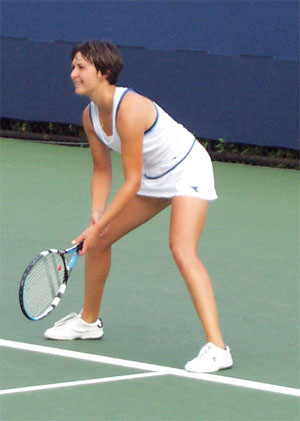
Yulia Beygelzimer Self Made